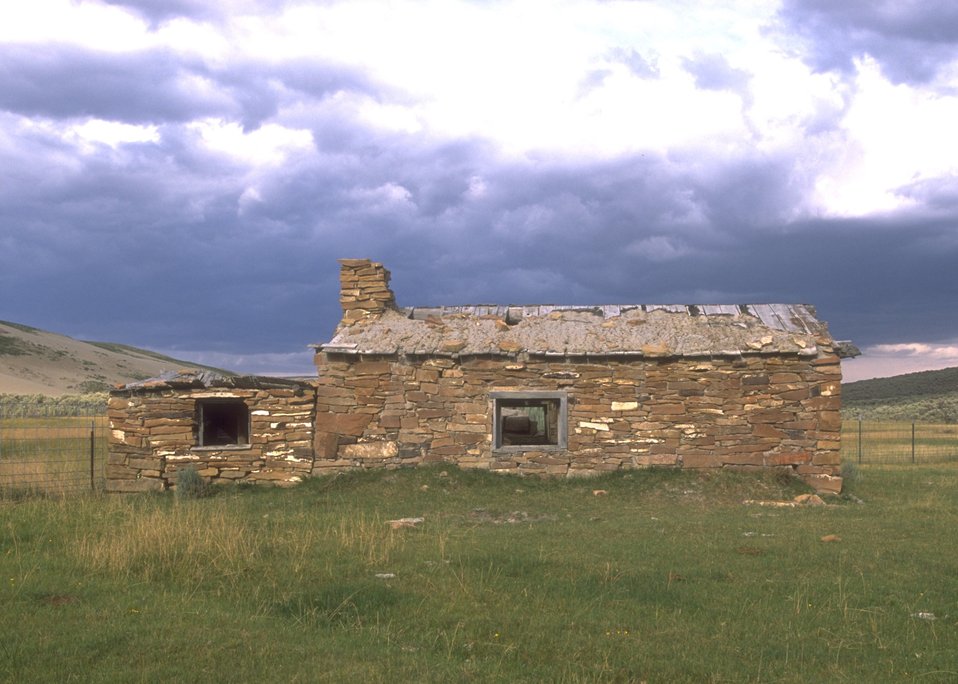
Historic Crookston Ranch near OHV Sand Dunes Area, Rock Springs Field Office.